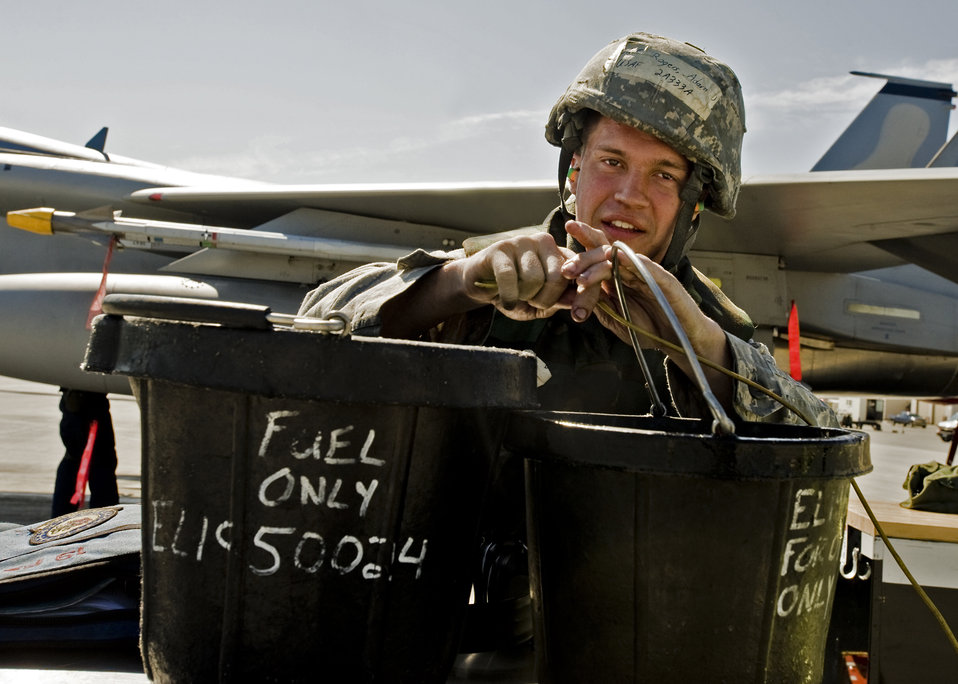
Polar Force readiness

Airman 1st Class Adam Rogers from the 19th Aircraft Maintenance Unit secures fuel buckets with a cable to his toolbox May 19 during Polar Force 09-05 at Elmendorf Air Force Base, Alaska. The exercise prepares base personnel for the upcoming operational readiness inspection beginning June 1.